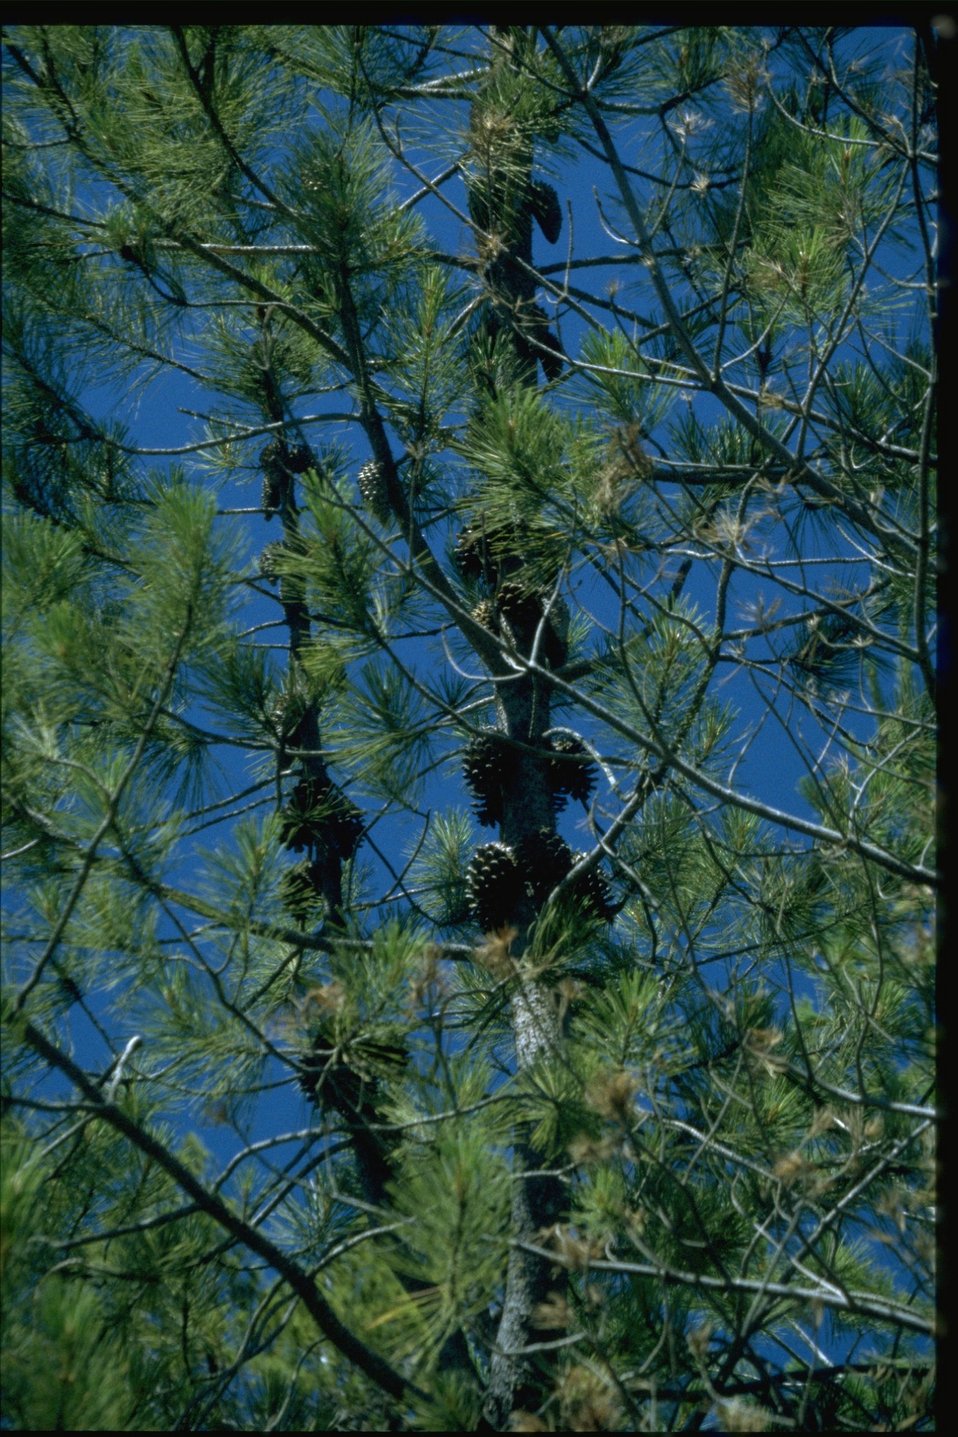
Medium shot of Knobcone Pine, Pinus attenuata.